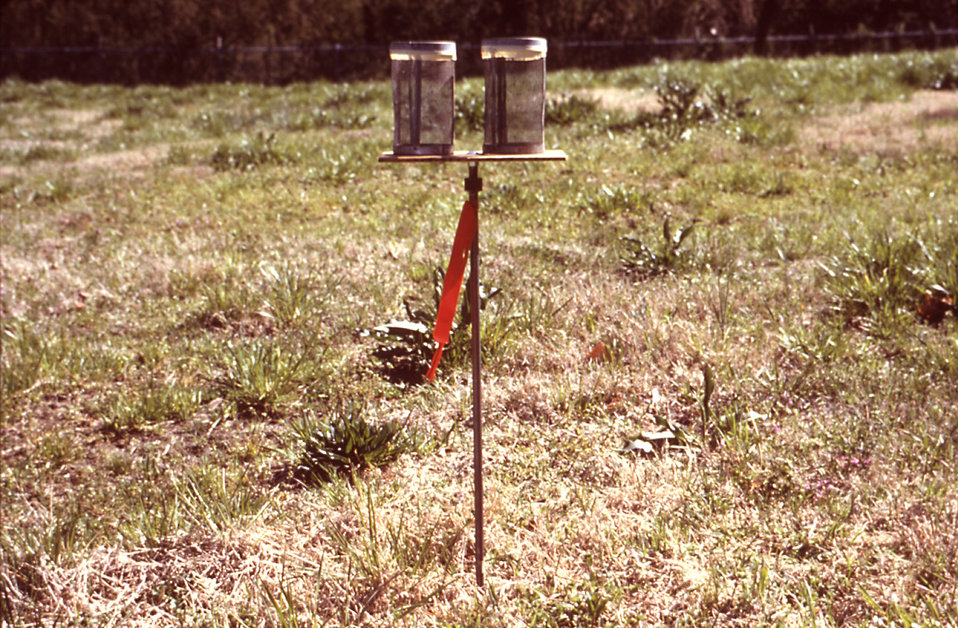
This 1981 photograph depicted two bioassay cages that had been properly placed atop a wooden stake within the geographic location into which was introduced an insecticide, the effectiveness of which is being tested.